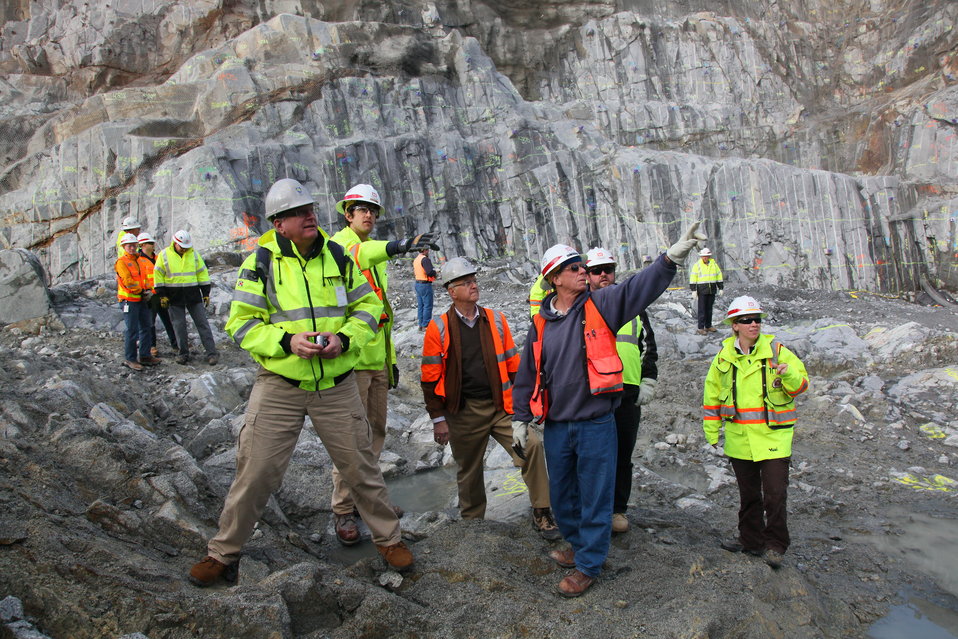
Evaluating the Folsom Dam auxiliary spillway foundation

A team of geologists from the U.S. Army Corps of Engineers Sacramento District meets with a consultant review board at the excavation site for the Folsom Dam auxiliary spillway in Folsom, Calif., Feb. 29, 2012. The board, made up of highly-qualified geology, geotechnical and structural experts, was hired to evaluate the integrity of the spillway’s foundation - a requirement for Corps’ civil works construction projects intended to reduce risk to lives to ensure they meet the highest safety standards. The spillway will allow Folsom Dam to release water sooner and more safely. The project is part of the Folsom Dam Joint Federal Project, a joint effort of the U.S. Army Corps of Engineers Sacramento District, the U.S. Bureau of Reclamation, the Central Valley Flood Protection Board and the Sacramento Area Flood Control Agency to improve the safety of the dam and reduce flood risk for the greater Sacramento area.